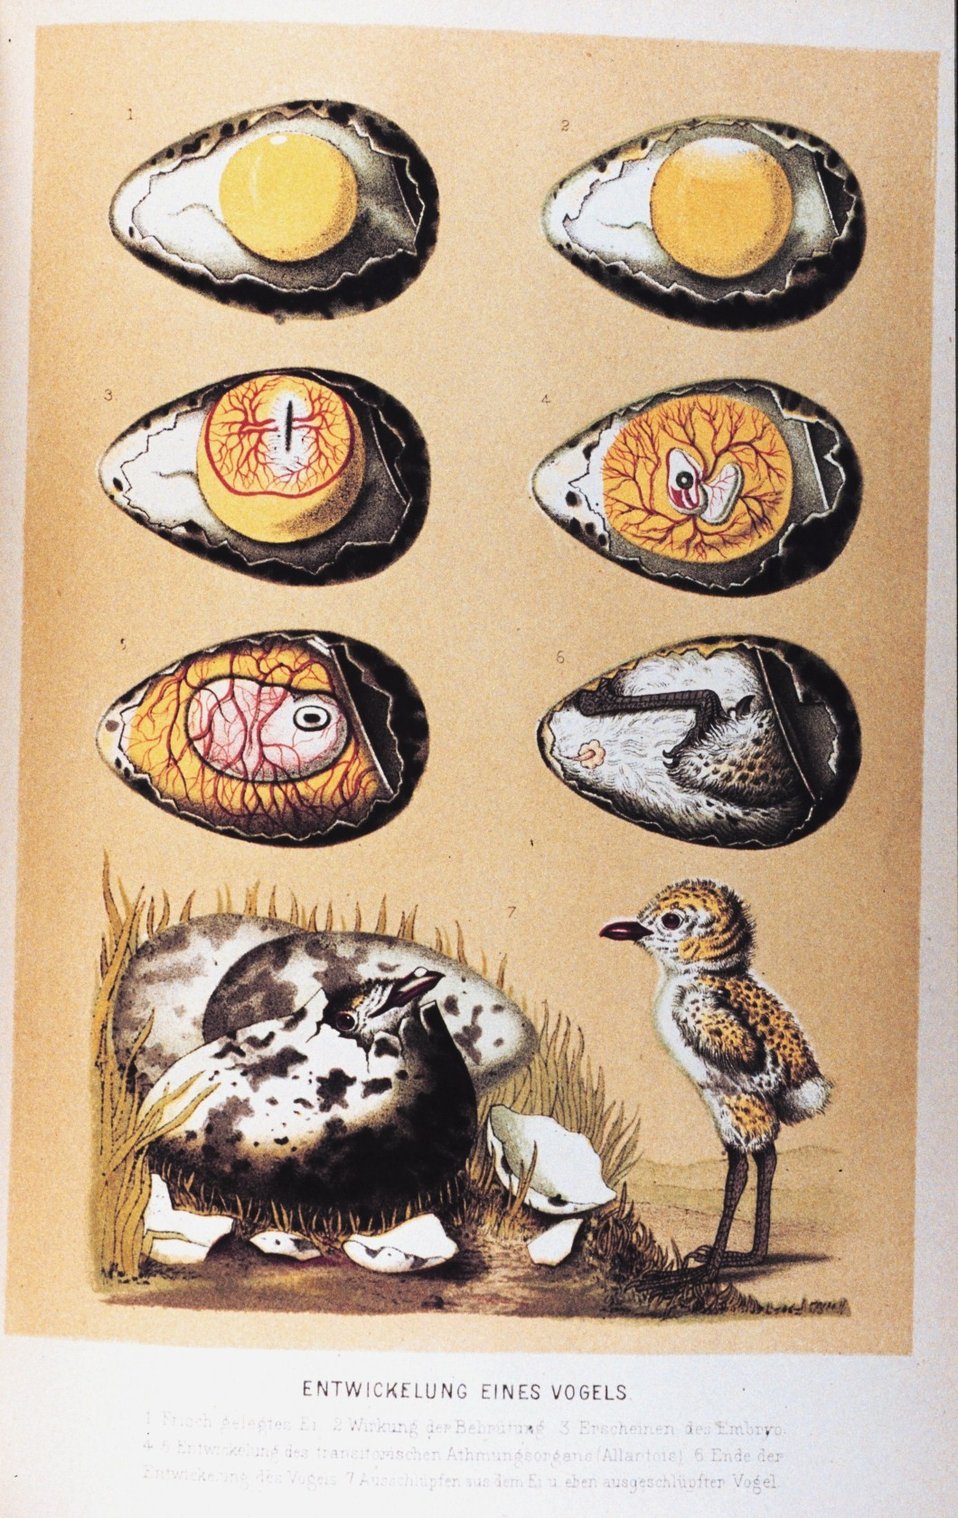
'Entwickelunge eines Vogels' in: 'Das Meer' by M. J. Schleiden, 1804-1881. P. 568. Library Call Number QH91.S23 1888.